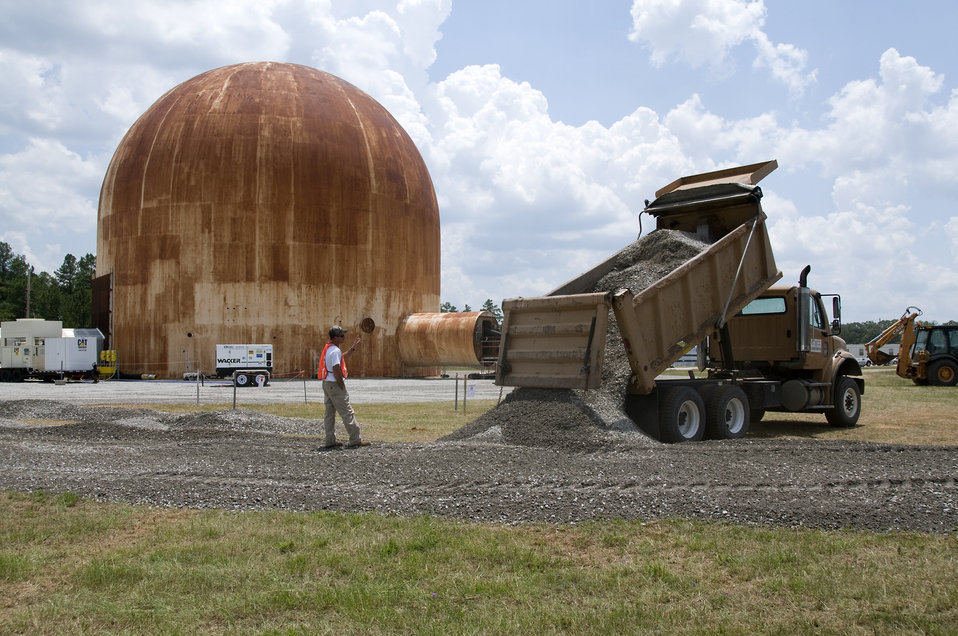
'Hector'

The HCTRW Reactor at Savannah River Site is one of the primary projects being worked on through the Recovery Act.